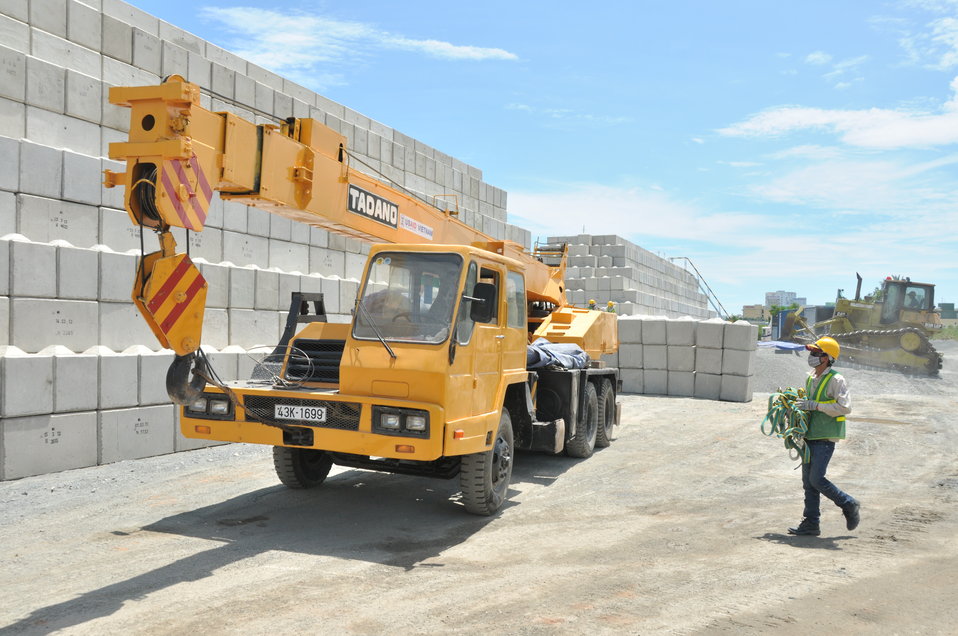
Site construction at the Environmental Remediation of Dioxin Contamination at Danang Airport

Progress at the Danang Airport remediation site
April 23, 2013